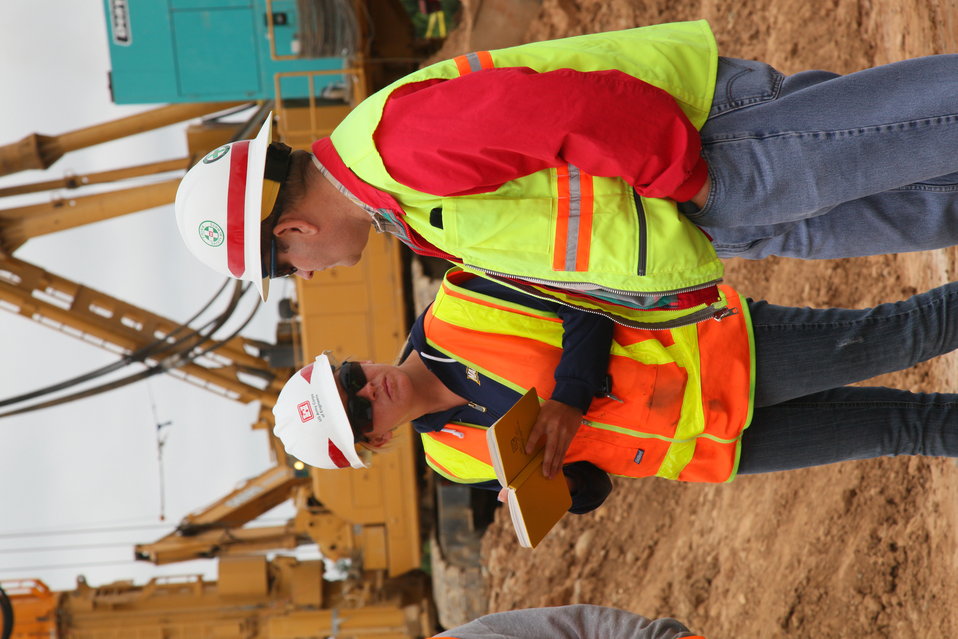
Corps moves forward with Marysville Ring Levee project

MARYSVILLE, Calif. – Quality Assurance representative Kelsey Warner (left) speaks with project manager Mark Ellis, both with the U.S. Army Corps of Engineers Sacramento District, near the Marysville Ring Levee project in Marysville, Calif., July 13. The Corps is using a deep soil mixing process, which combines clay bentonite and cement with existing soil to create a thick, solid surface that won’t allow water to leak through or beneath the levee, to upgrade a 4,000-foot section of the levee as part of the project’s first phase. This $10.8 million phase of the project has been funded by the American Recovery and Reinvestment Act of 2009 and is scheduled to be completed in November 2011.